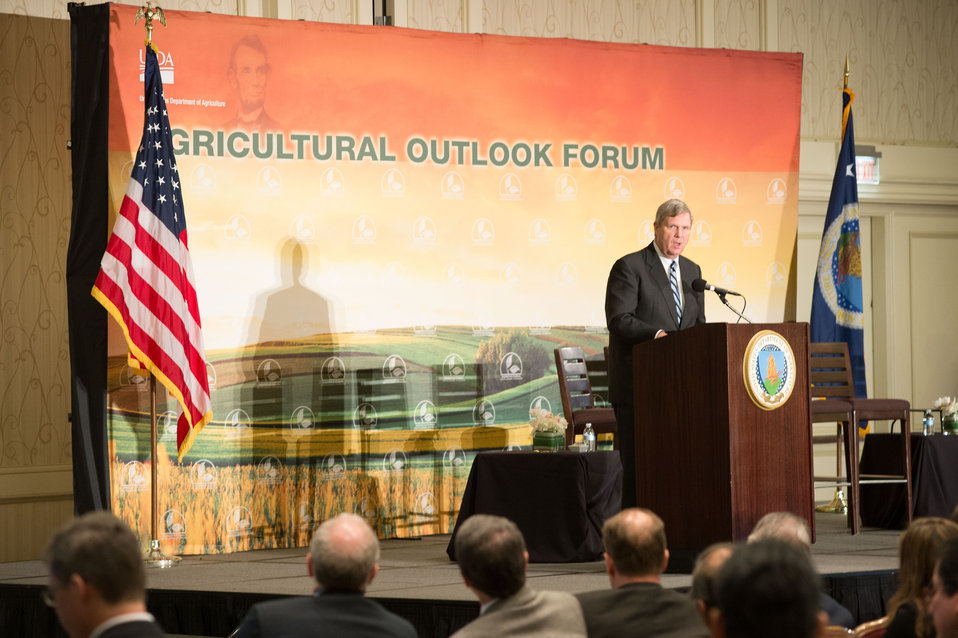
Agriculture Secretary Tom Vilsack makes remarks at the 2014 Agricultural Outlook Conference on Thursday, Feb. 20, 2014 in Arlington, VA. The U.S. Department of Agriculture's (USDA) annual Agricultural Outlook Forum brings together the agricultural community to discuss policy, trade, science, rural development, and the economic outlook for the coming year. The Forum also focuses on forestry, health and nutrition issues, and the changing dynamics and face of rural America.